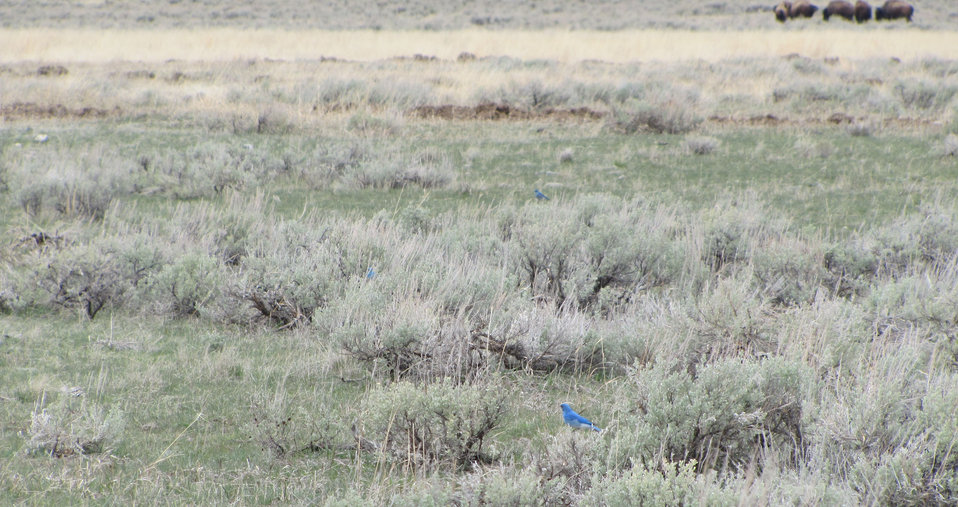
Mountain Bluebirds in Spring

The striking color of a Mountain Bluebird makes it easy to spot in a field of sagebrush. Can you find all three bluebirds? (Use the zoom tool to help.)

Note the group of bison in the background.